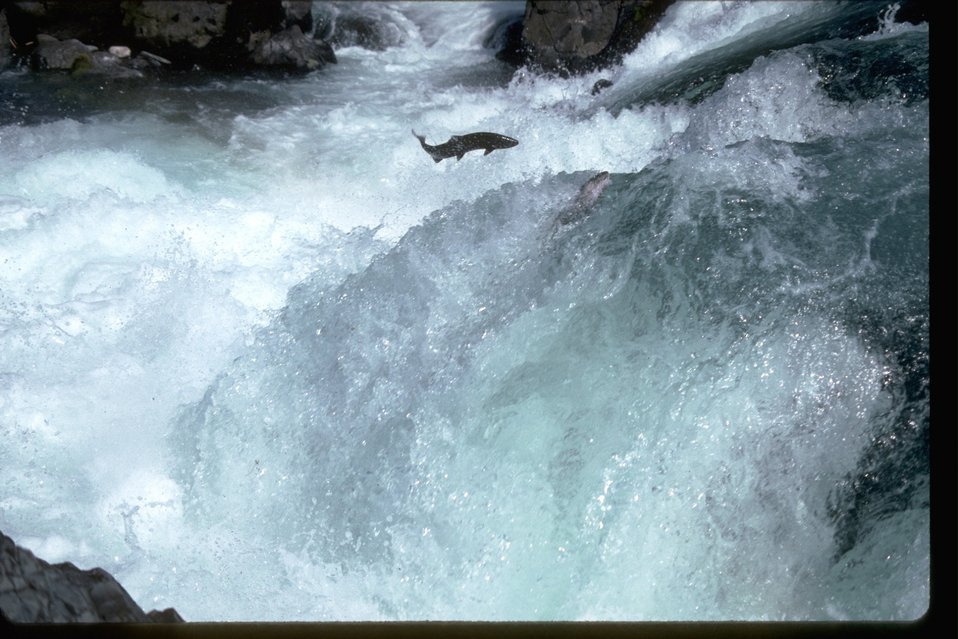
Salmon or Steelhead jumping up falls.